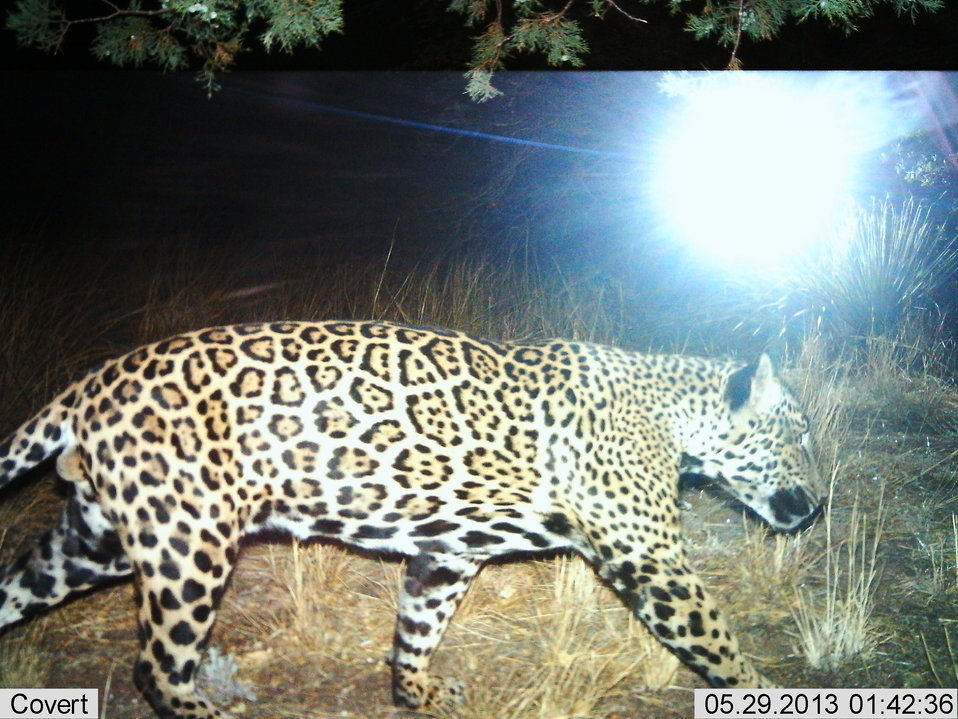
Male jaguar photographed by automatic wildlife cameras in the Santa Rita Mountains on May 29, 2013, as part of a U.S. Fish and Wildlife Service/Department of Homeland Security-funded jaguar survey conducted by University of Arizona. Comparison of pelage markings with other photos confirms that this is the same jaguar that has been repeatedly photographed in the survey area in the Santa Rita Mountains. This is one of two jaguar photos taken from paired cameras (both sides of jaguar photographed) on May 29, 2013. The jaguar has been photographed several times from this location.